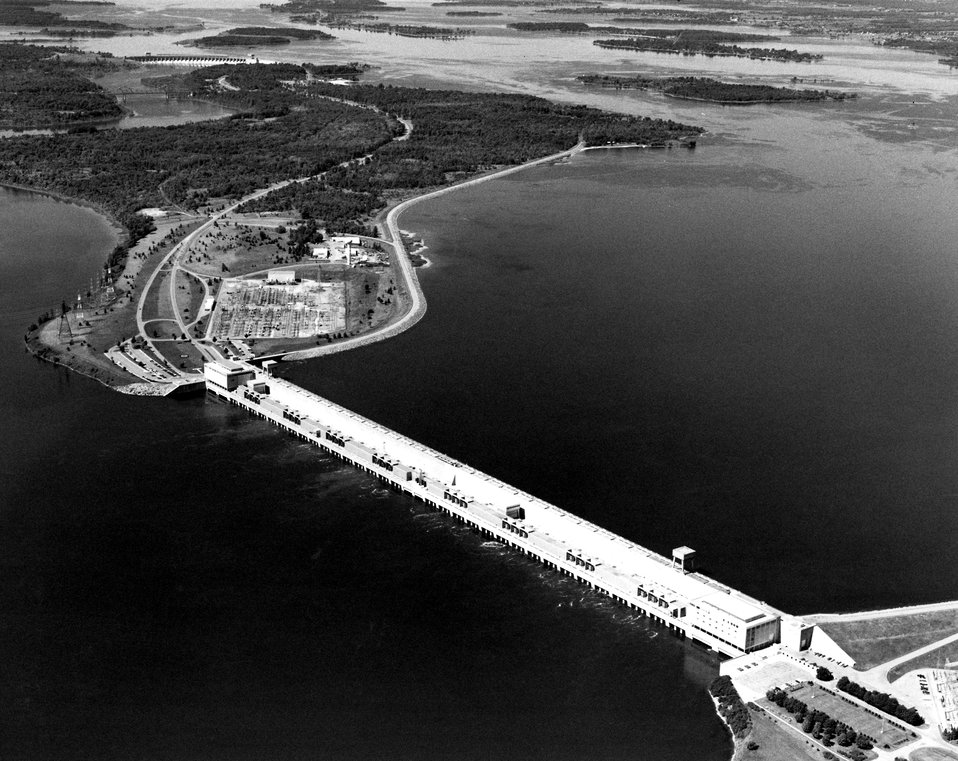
Power Authority of New York. c. 1981